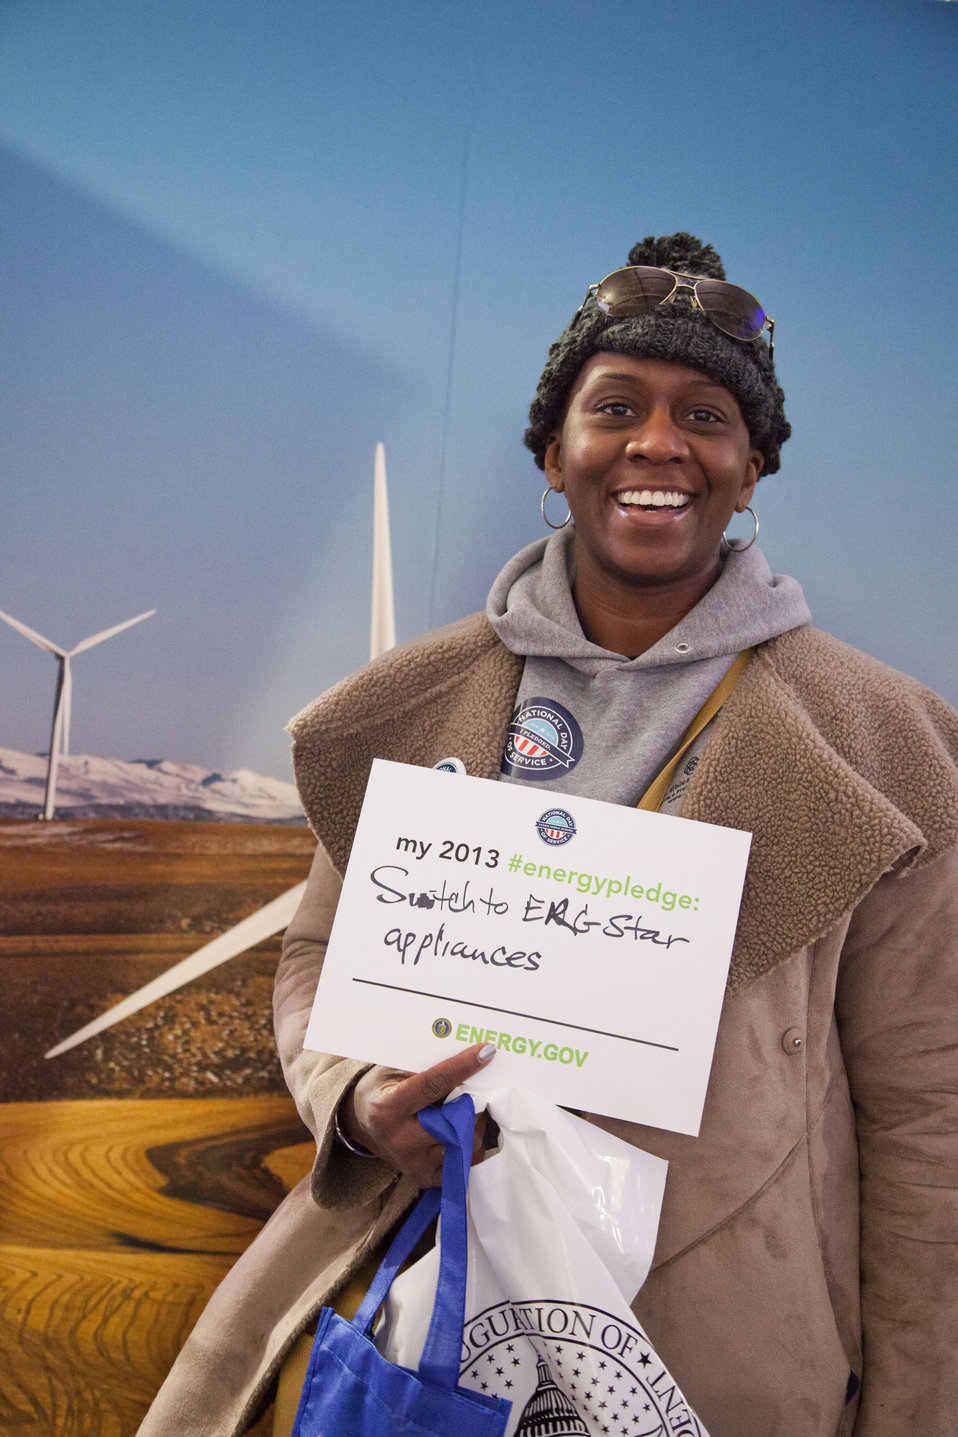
What's your #energypledge?